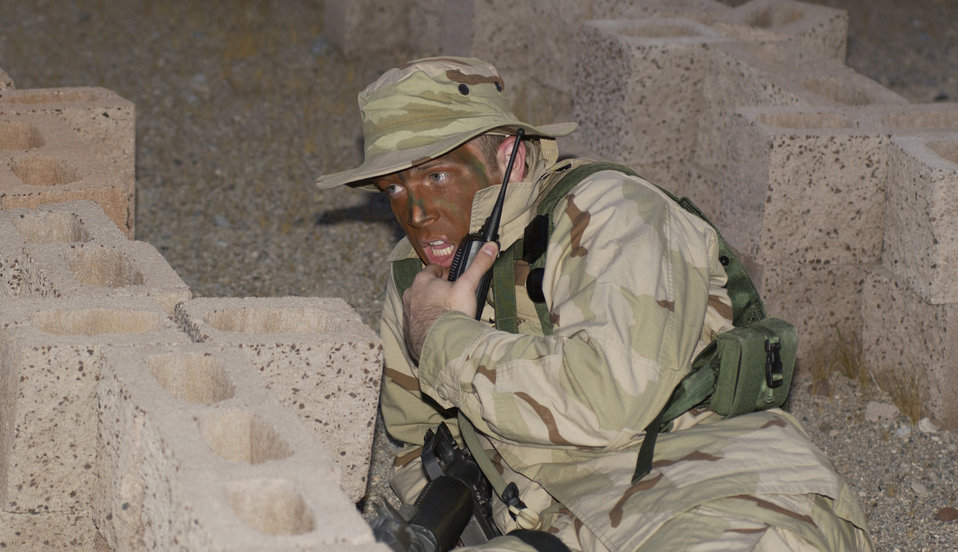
War games

NELLIS AIR FORCE BASE, Nev. -- First Lt. Eric Stride calls for backup while participating in a training exercise here. He was on the opposing force trying to break into the training camp. The three-day exercise included training on first aid, convoys and map reading to help prepare 99th Civil Engineer Squadron Airmen for deployment. Lieutenant Stride is the 99th Communications Squadron's network control center crew commander.